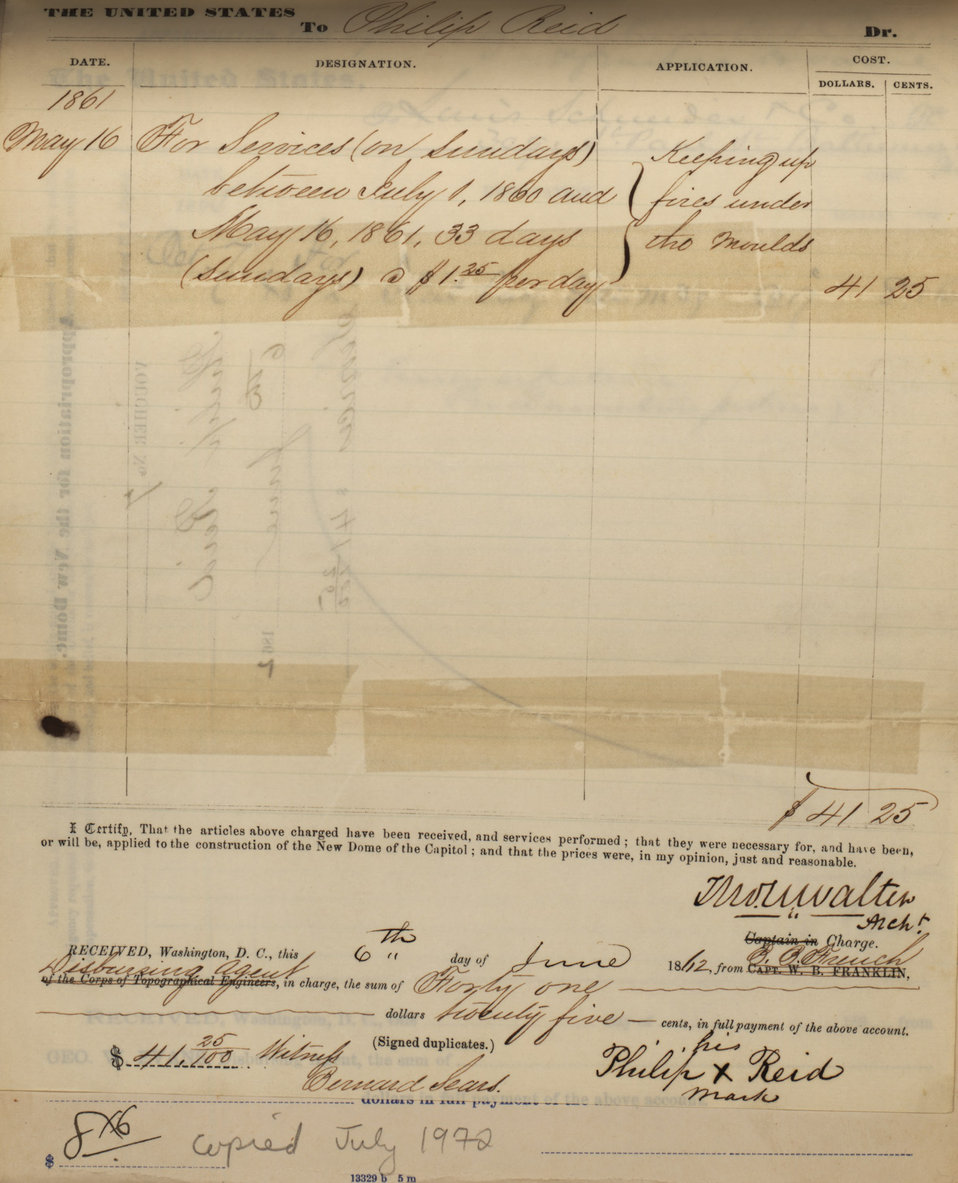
Pay Voucher for Philip Reid from Architect of the Capitol Thomas Walter for work on Statue of Freedom

Enslaved worker Philip Reid was paid directly for his work on Sundays; his owner received the payment for his work the other six days.

He was paid at $1.25 per day for “Keeping up fires under the moulds.” He signed his name with an 'X'.

Read more about Philip Reid's contribution to the Statue of Freedom.